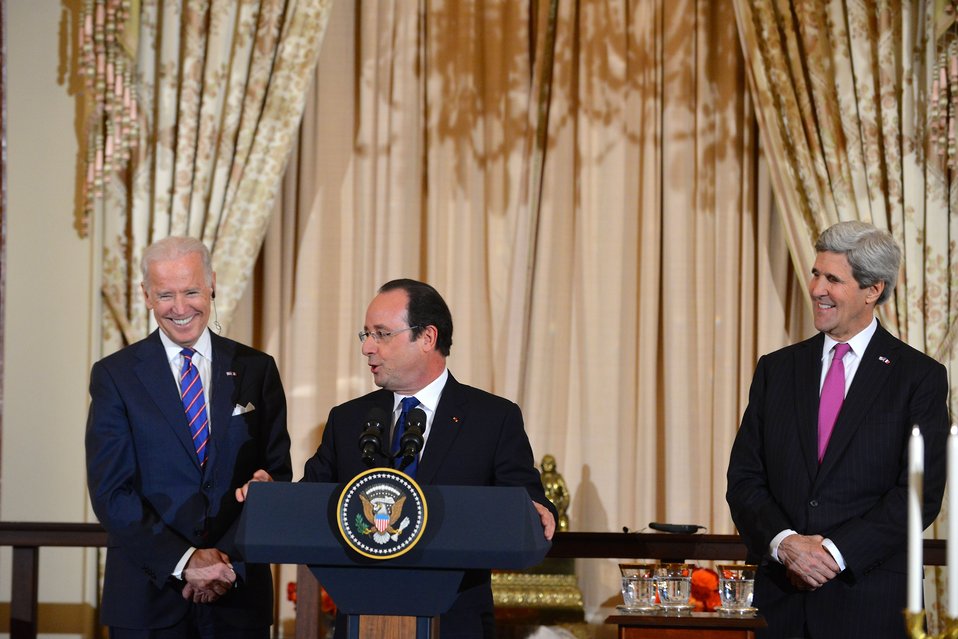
French President Hollande Delivers Remarks at a State Lunch

With U.S. Secretary of State John Kerry and Vice President Joe Biden looking on, French President Francois Hollande delivers remarks at a State Lunch in his honor at the U.S. Department of State in Washington, D.C., on February 11, 2014.